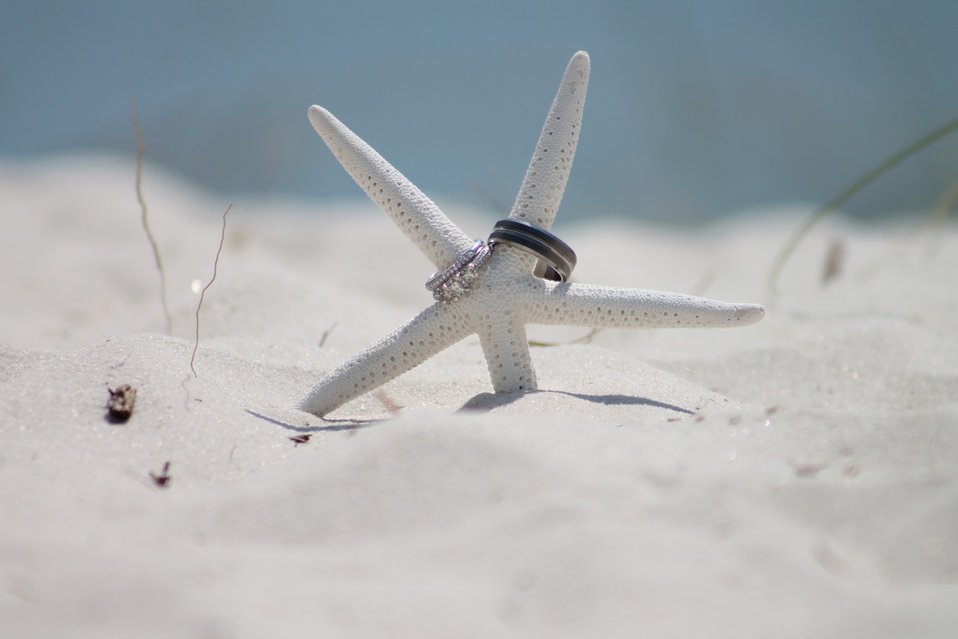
The rings

Wedding rings on starfish.